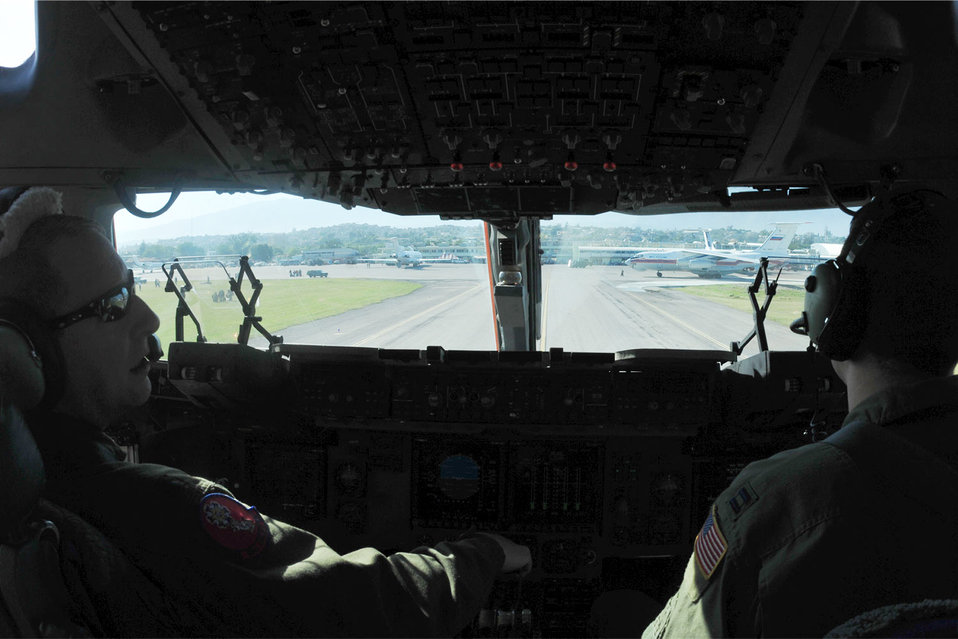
Delivering hope, relief

Piloting a C-17 Globemaster III, Lt. Col. Brian Ede and Capt. John Damron taxi onto the parking ramp at the Toussaint L'Ouverture International Airport in Port-au-Prince, Haiti Jan. 18, 2010. The C-17 from Altus Air Force Base, Okla., delivered Army servicemembers and vehicles in support of Operation Unified Response. Both Airmen are assigned to the 58th Airlift Squadron where Colonel Ede is commander.